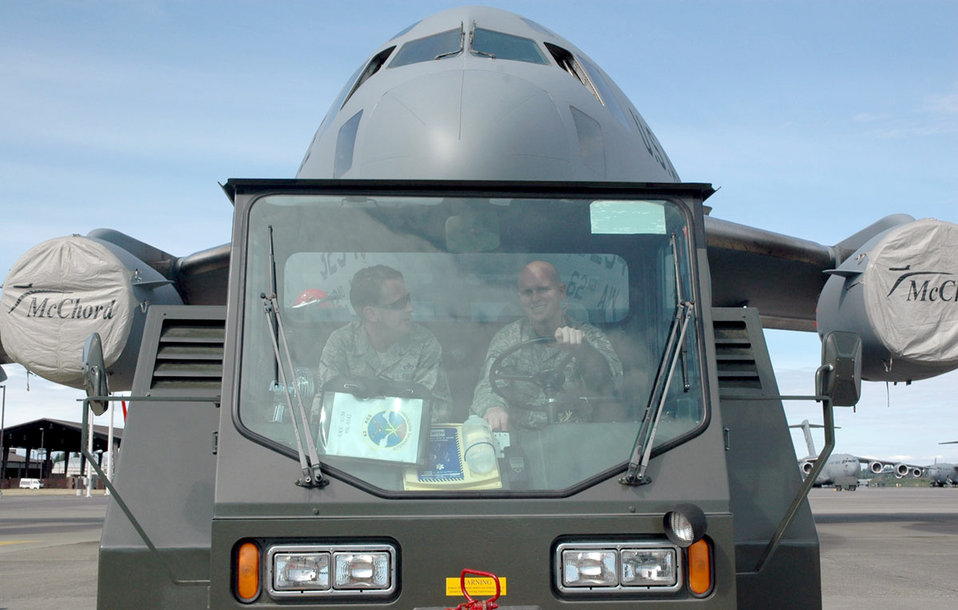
Coming through

Master Sgt. Wayne Ruedinger (left) and Tech Sgt. Merle Brooks look like they're about to get steamrolled by a C-17 Globemaster III, but they're actually preparing to tow the aircraft to a maintenance hangar Sept. 11, 2010, at Joint Base Lewis-McChord, Wash. Sergeant Brooks is a crew chief and Sergeant Ruedinger is a guidance and control specialist with Air Force Reserve Command's 446th Aircraft Maintenance Squadron.